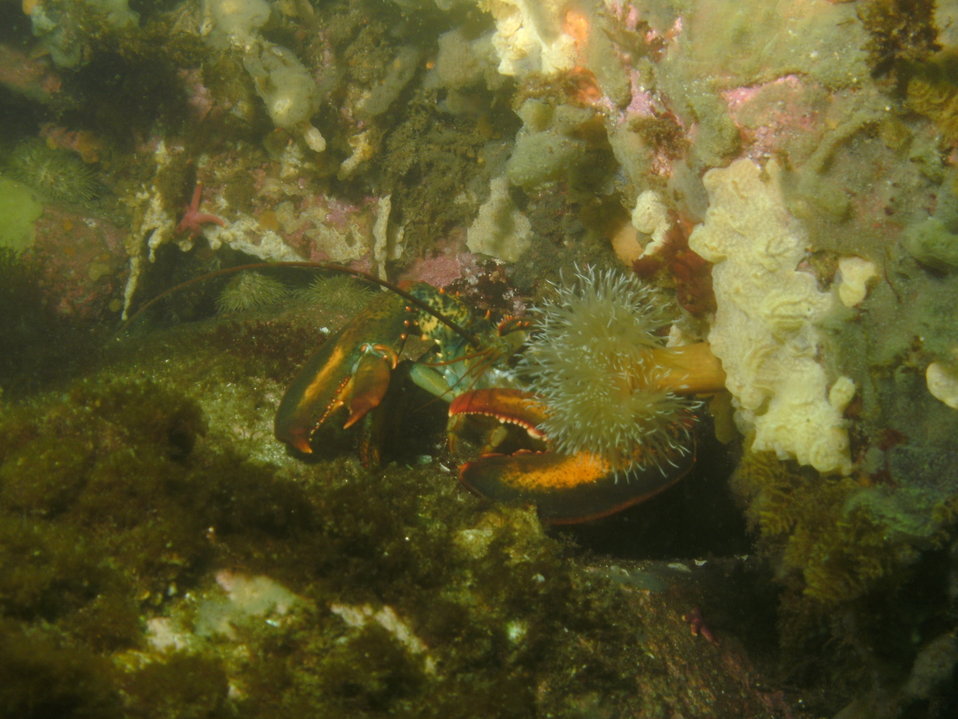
August 7, 2012 Not for the pot

The lobster is an iconic New England commercial species, but this one is safe for another day.

As part of our diving work at EPA, we are often assessing habitat quality or compiling species lists. 'No matter how many times we see lobsters (and we see lots of them), I am always amazed at the variation in coloration. No two ever seem to be exactly the same combination of colors. For some reason, the colors always seem more vivid in the wild, than in the tank at the supermarket.' - EPA Diver Phil Colarusso.

Lobsters can be found in a wide range of habitats from boulder fields to cobble to soft sediments. We routinely find them in eelgrass meadows digging burrows in the soft sediment. The root structure of the plant prevents the roof of the burrow from caving in.

Find out more about EPA Dive work